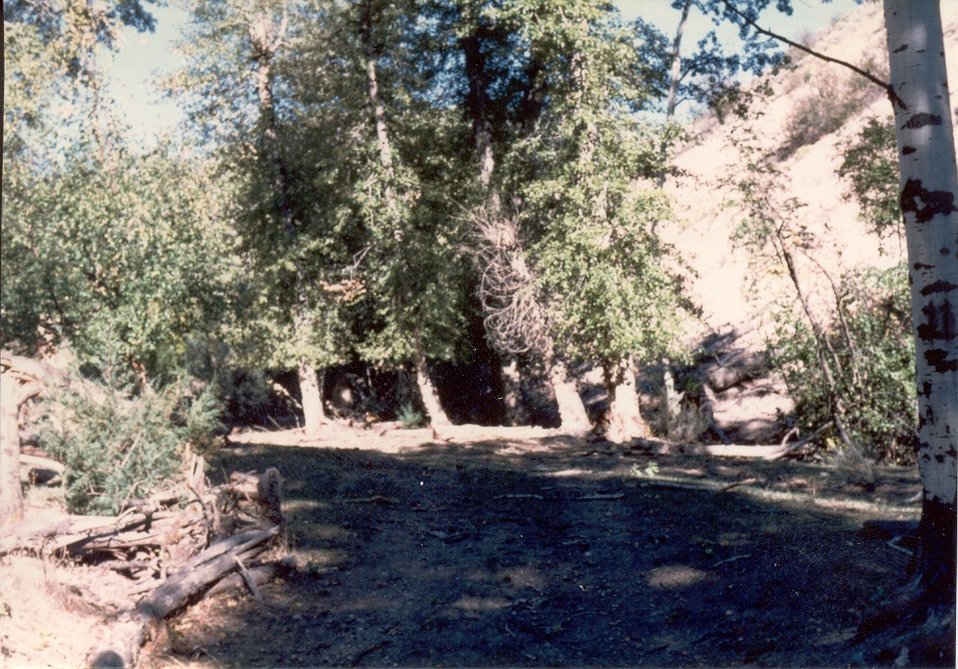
Roads Recreation Erosion Salmon Field Office UCSC Upper Columbia Salmon Clearwater District